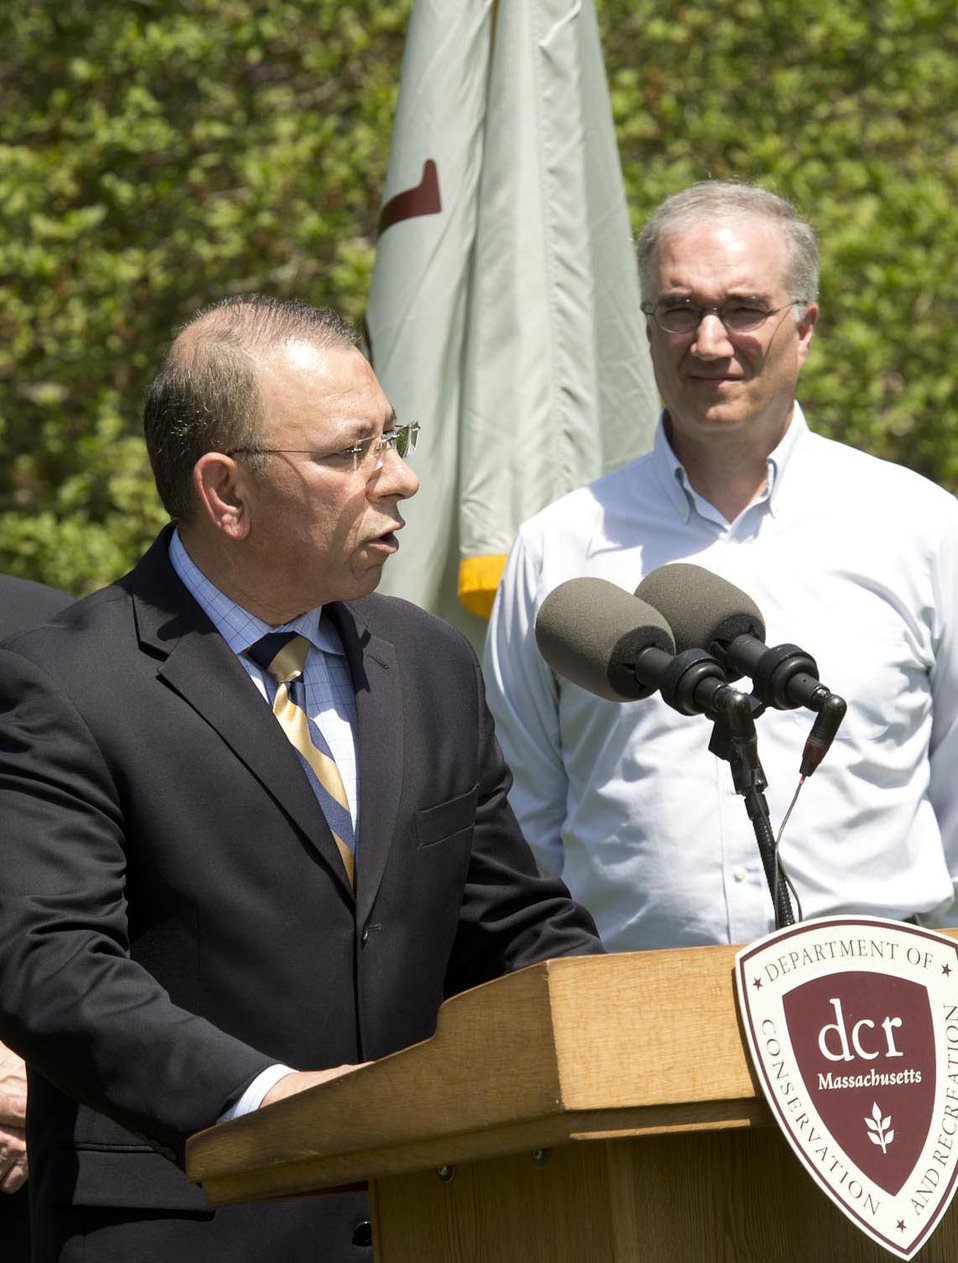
U.S. Department of Agriculture (USDA) Animal Plant Health Inspection Service (APHIS) Plant Protection and Quarantine (PPQ) Deputy Administrator Osama El-Lissy, speaks at the declaration event for the eradication of Asian Longhorned Beetle (ALB) in Boston, MA on May 12, 2014. Federal, state and local officials joined together to announce that ALB has been eradicated from the Boston regulated area. Boston joins five other areas to declared eradication of ALB in the U.S. USDA photo by Anson Eaglin.
.